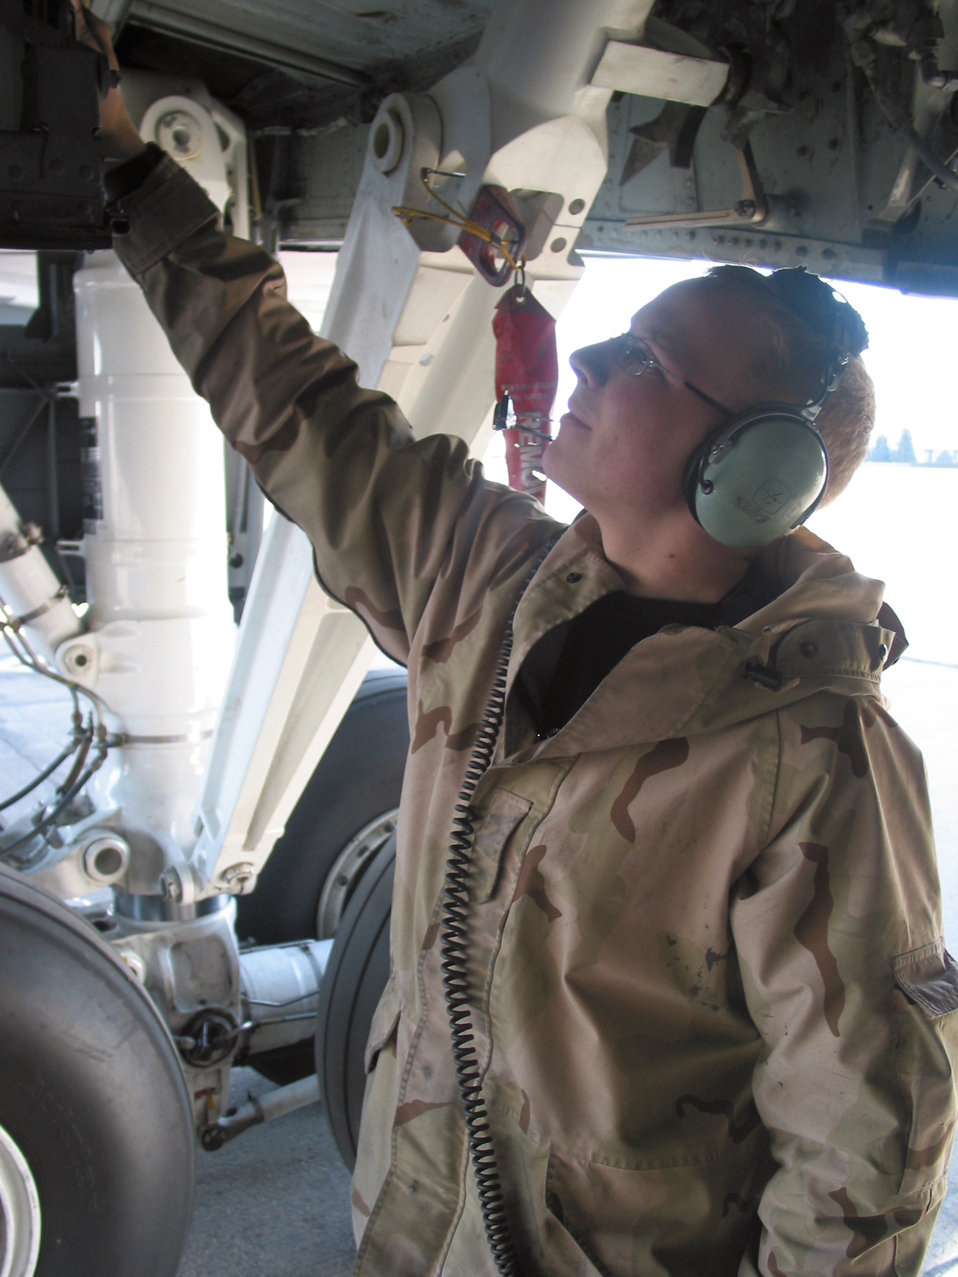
Keeping fuel flowing

MANAS AIR BASE, Kyrgyzstan -- Senior Airman Micah Ramthun checks the wheel well of a KC-135 Stratotanker. He is assigned to the 376th Expeditionary Maintenance Squadron.